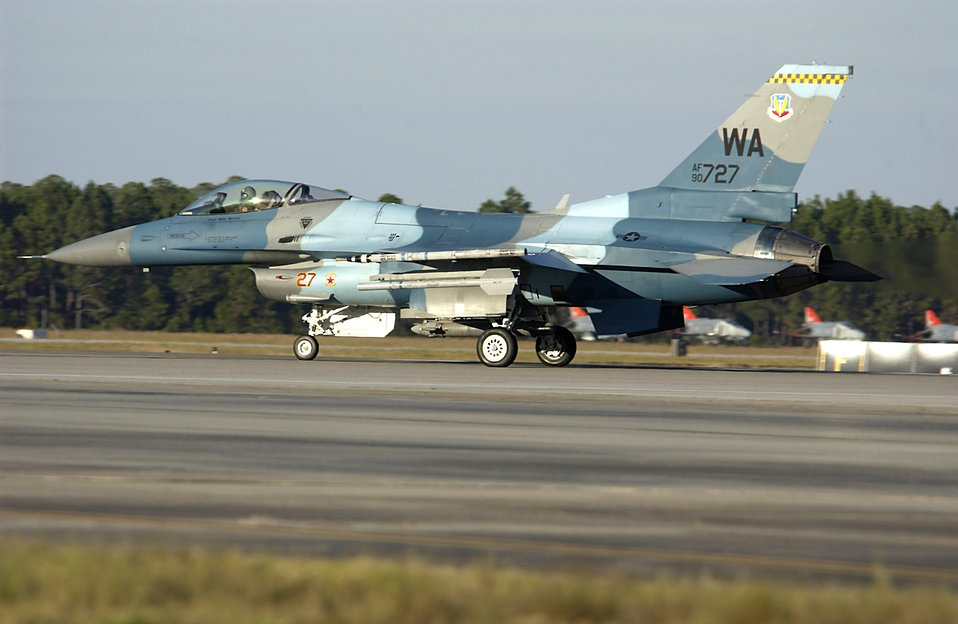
William Tell 2004

TYNDALL AIR FORCE BASE, Fla. – An F-16 Fighting Falcon from Nellis Air Force Base, Nev., prepares to take off and fly as a team aggressor during William Tell 2004 here Nov. 8. The two-week competition challenges pilots, weapons loaders and maintainers from five F-15 fighter wings.